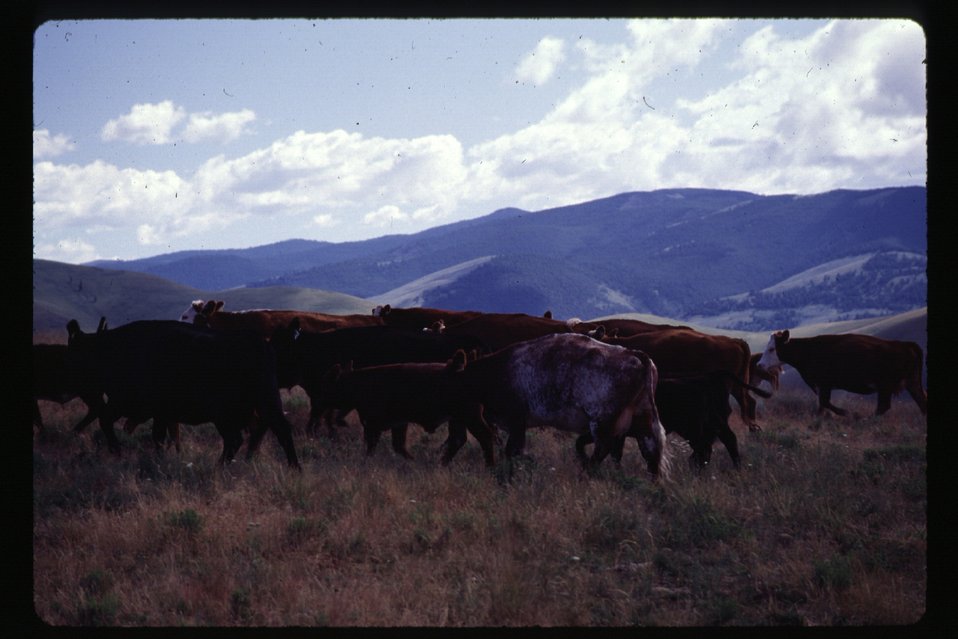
Grazing cows Rangeland Four Rivers Field Office LSRD Lower Snake River District